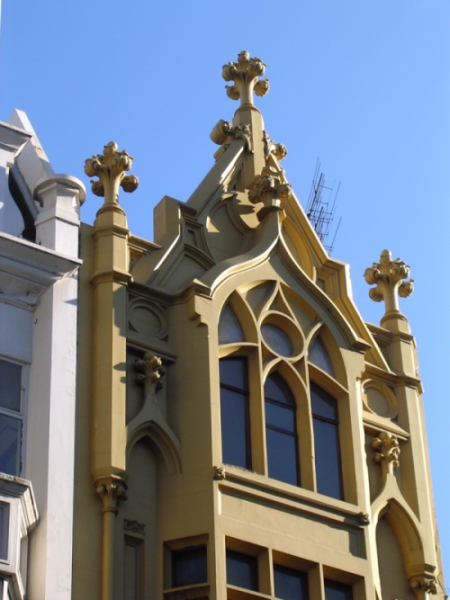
1930s Gothic facade on Bourke Street Mall, Melbourne